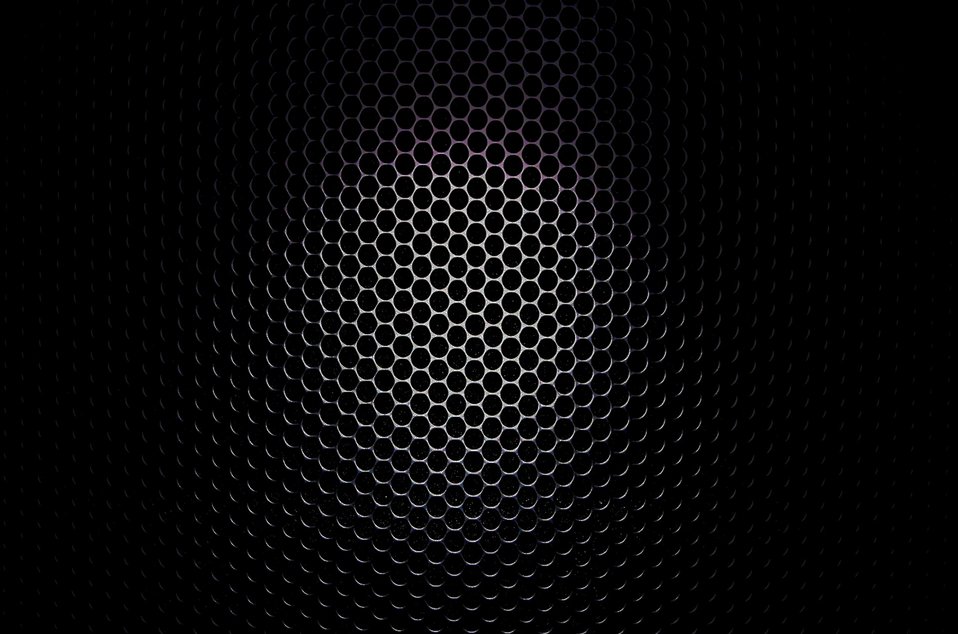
Background

Black background.